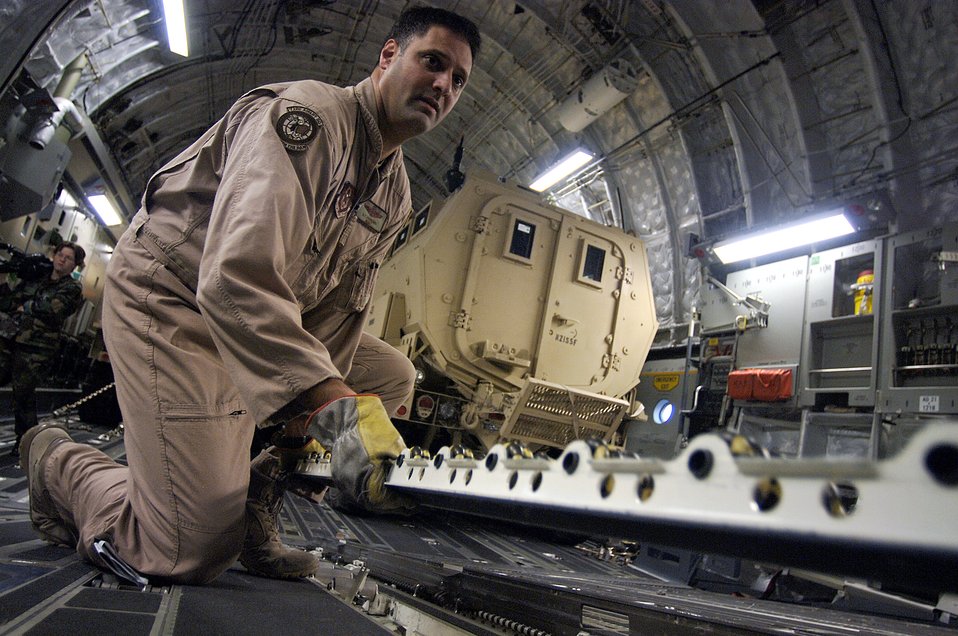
Load 'er up

Master Sgt. Richard Ferraro, a C-17 Globemaster III loadmaster from McGuire Air Force Base, N.J., prepares to load pallets with additional parts for the Mine Resistant Ambush Protective Vehicle already tied down in the aircraft.